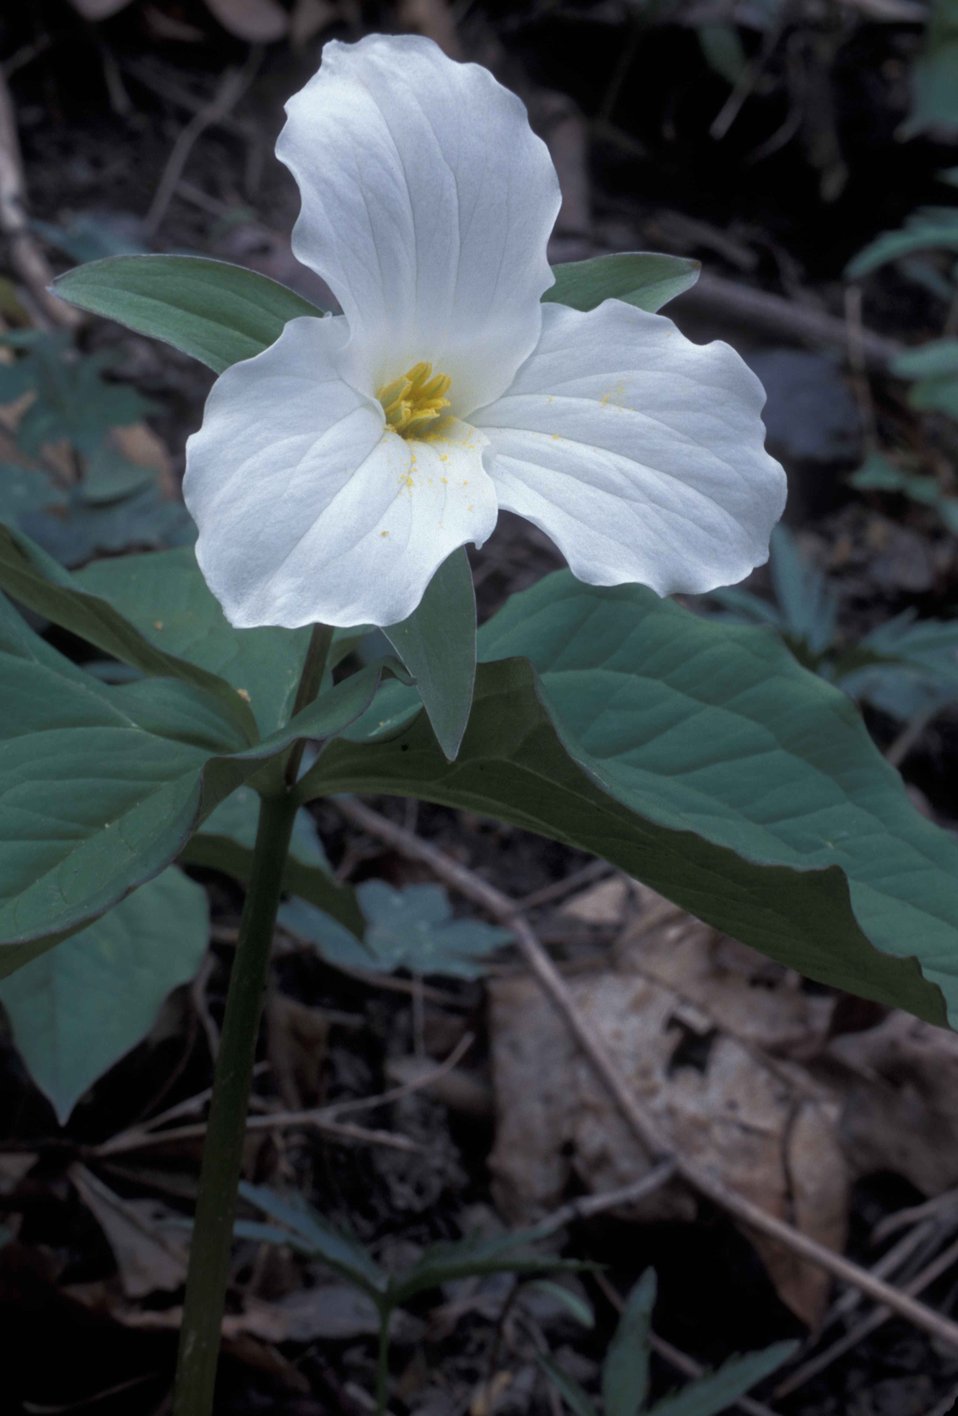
English:
Image title: A close view of the large white flower of a trillium plant Trillium grandiflorum Image from Public domain images website, http://www.public-domain-image.com/full-image/flora-plants-public-domain-images-pictures/flowers-public-domain-images-pictures/trillium-pictures/a-close-view-of-the-large-white-flower-of-a-trillium-plant-trillium-grandiflorum.jpg.html